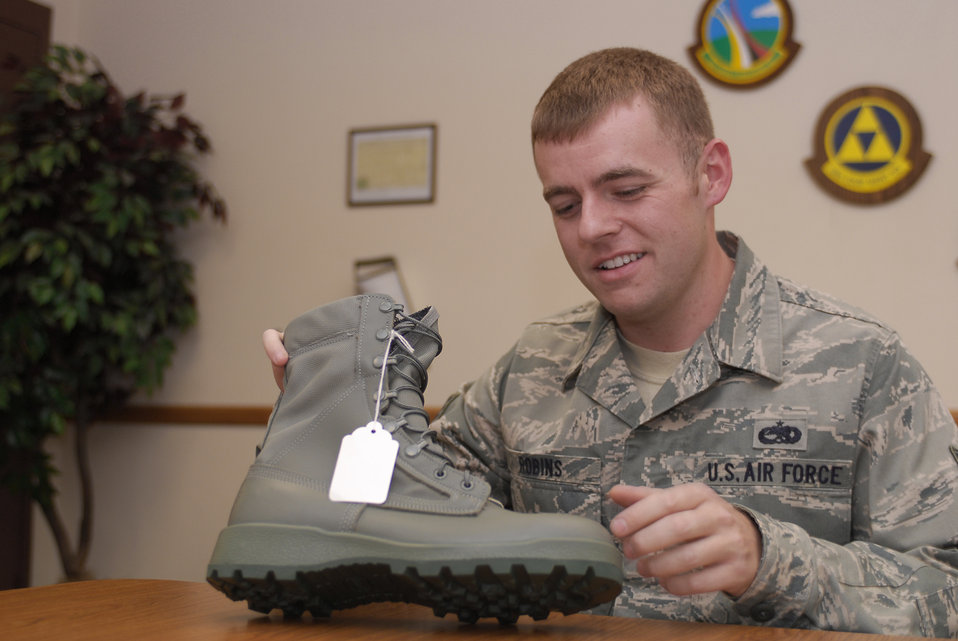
Luke Airmen to test new stain resistant footwear

Staff Sgt. William Robins gets an idea of what he will be wearing for a 45-day test as he examines the prototype stain-resistant boot June 10 at Luke Air Force Base, Ariz. Two hundred Airmen will wear test the boot. The prototype selected will be low-maintenance and resistant to staining from harsh chemicals, oils, and fuels. Sergeant Robins is with the 56th Equipment Maintenance Squadron.